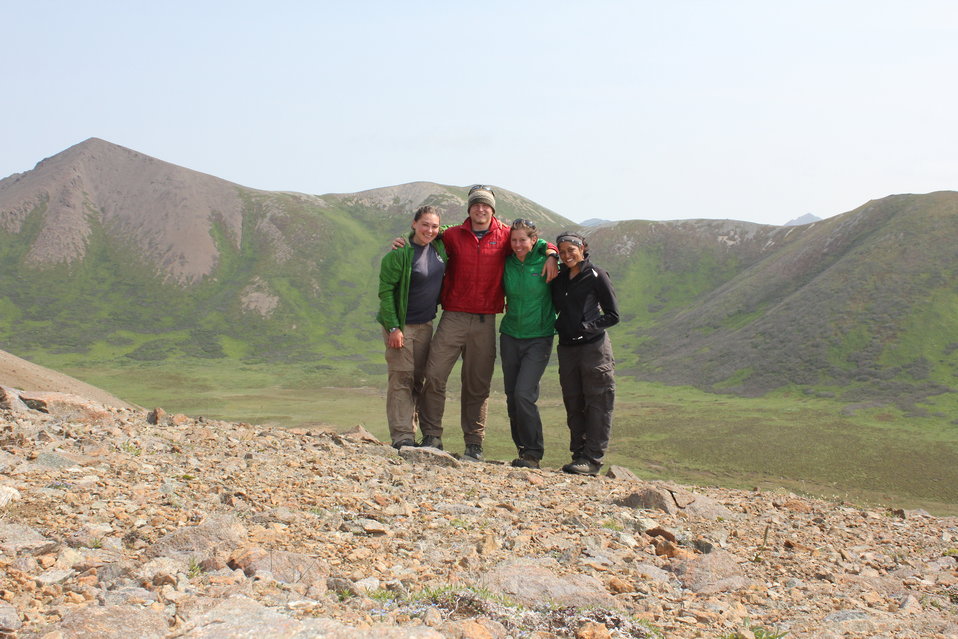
2012 Kittlitz's murrelet research crew

Photo Credit: USFWS
Source: Kodiak NWR
Since 2008, the Kodiak Refuge has conducted research on the nesting ecology of the Kittlitz's murrelet, a rare seabird.